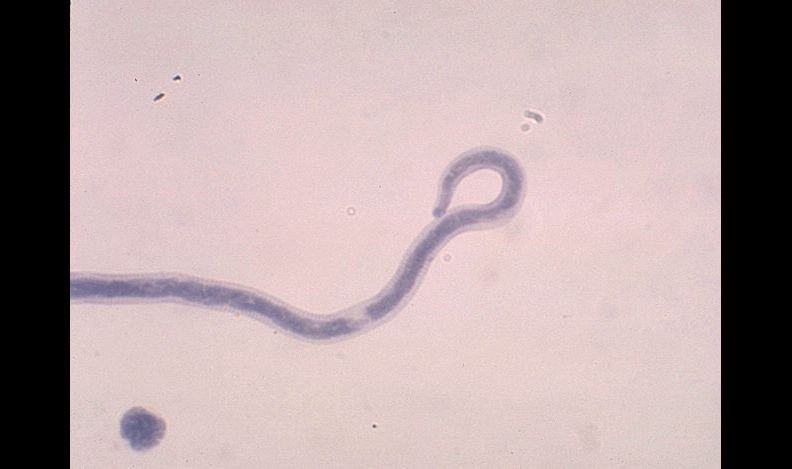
Dipetalonema perstans, posterior end.